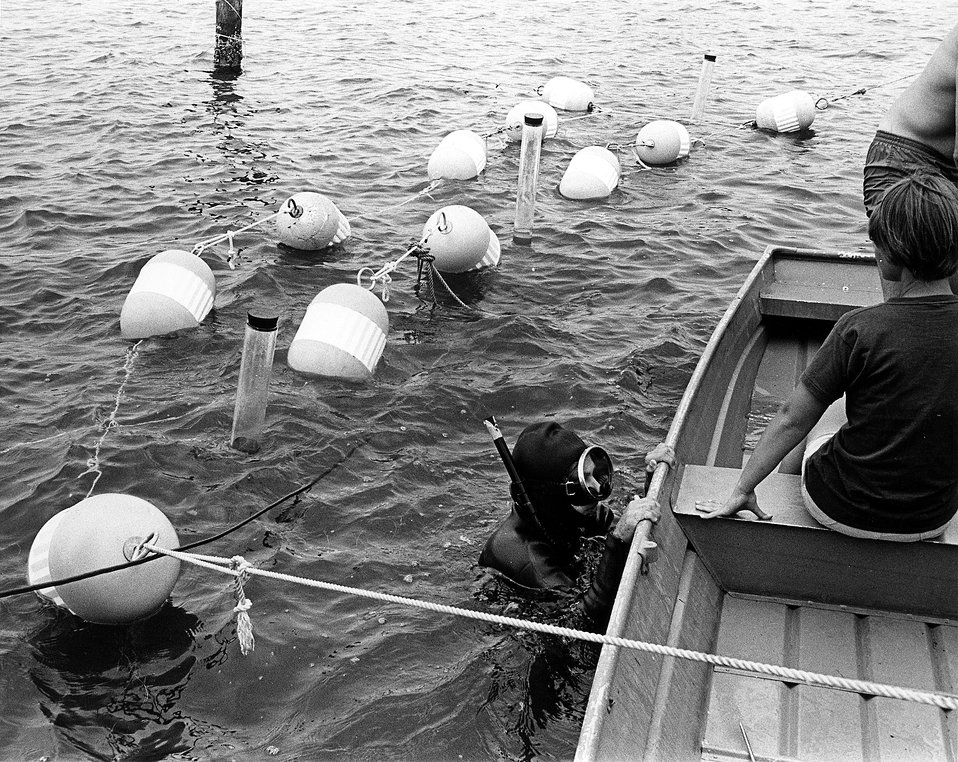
A University of Maryland diver prepares to check an underwater research project designed to examine the inter-relationship of aquatic life in the Chesapeake Bay and the importance of each species to the health of the whole community. Circa 1972.